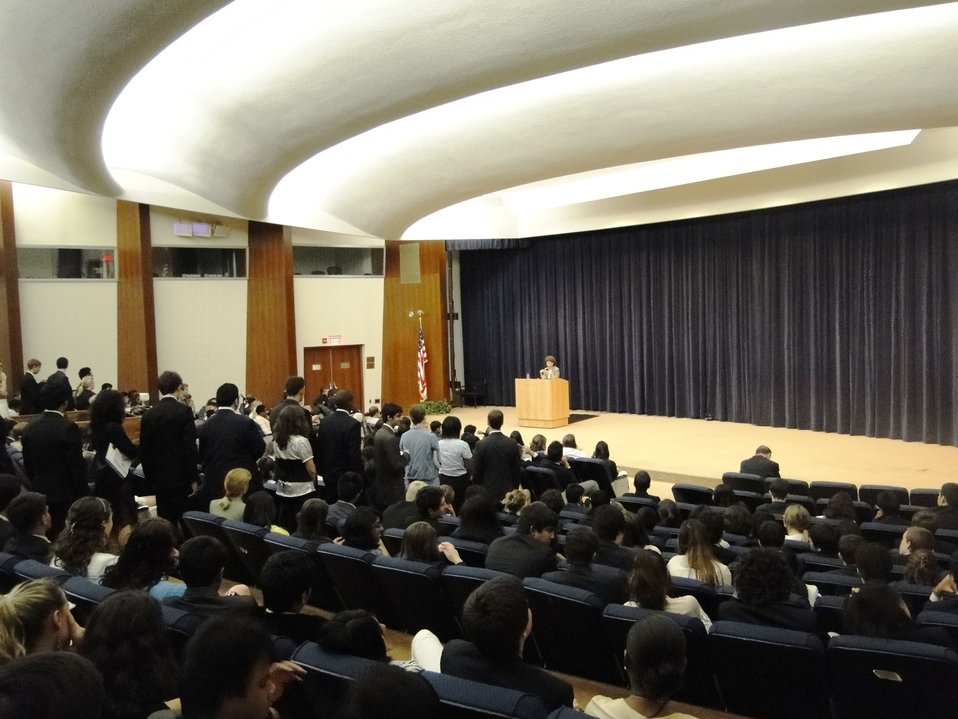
Global Youth Leaders discuss human rights at the U.S. Department of State in Washington, D.C., on June 23, 2010.